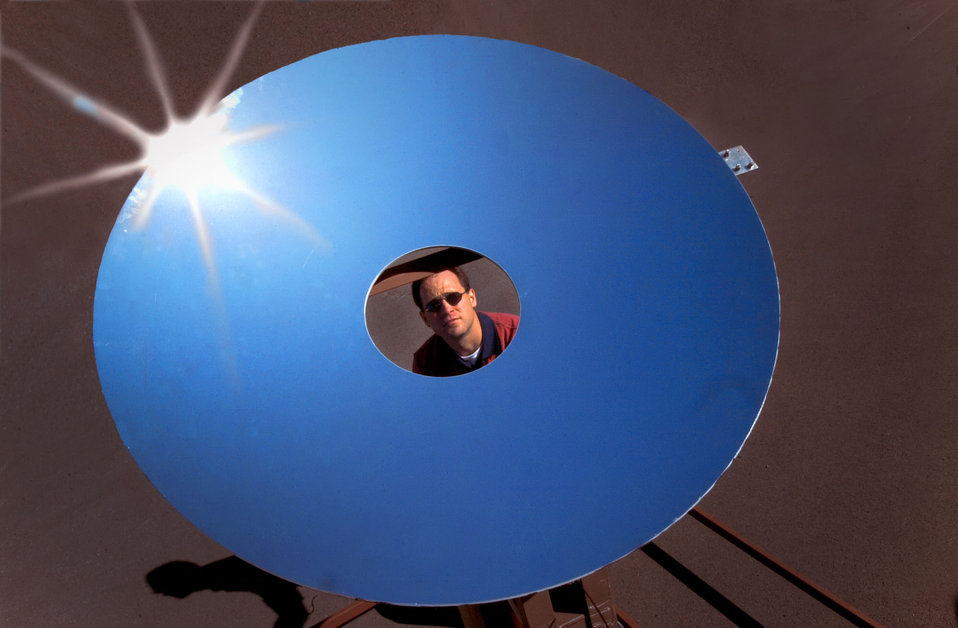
Hybrid lighting technology ORNL

01-126-15 DOE photo by Lynn Freeny Hybrid lighting technology Oak Ridge National Lab. Oak Ridge Tennessee 2001